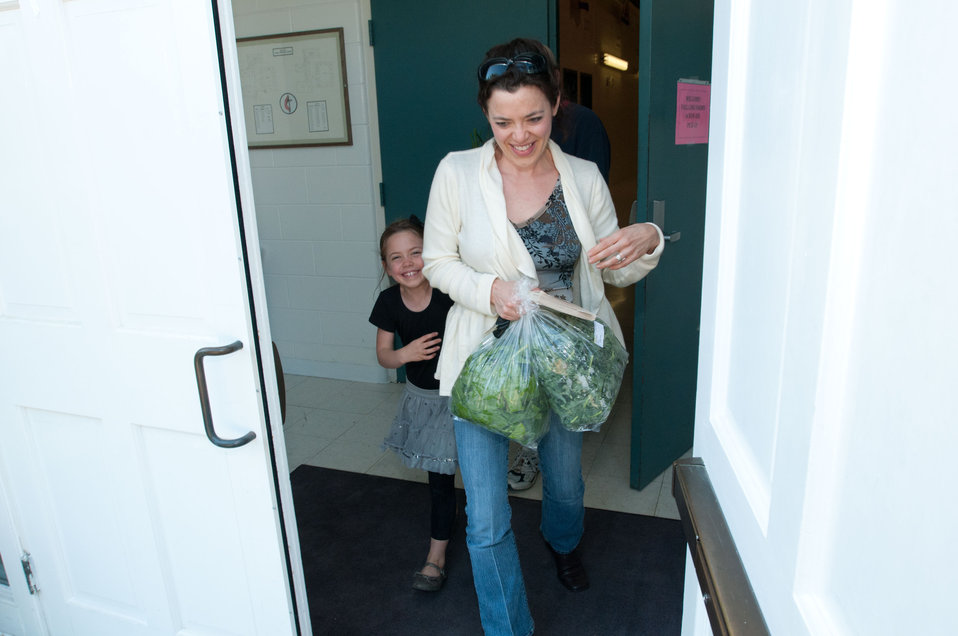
Happy with their order, Christy and Lilah Talbott of Richmond, VA leave to the Fall Line Farms pick-up point at Bon Air United Methodist Church, in Richmond, VA, on Thursday, May 5, 2011. This is one of several pick-up points in the Richmond, VA area. This local food hub offers a wide variety of household food staples and specialty items. The difference from traditional co-ops is that members can pick their customized orders from an ever changing inventory of fruits, vegetables, meats, soaps, eggs, cheeses, flowers, honey, pastas, sauces, syrups, baked goods, mushrooms, flour and grains. Suppliers post what they have on a Lulus Local Food online listing and customers can make their selection. Every Thursday suppliers deliver orders to, one of several pick-up points, designated by the customers in or around the Richmond area.